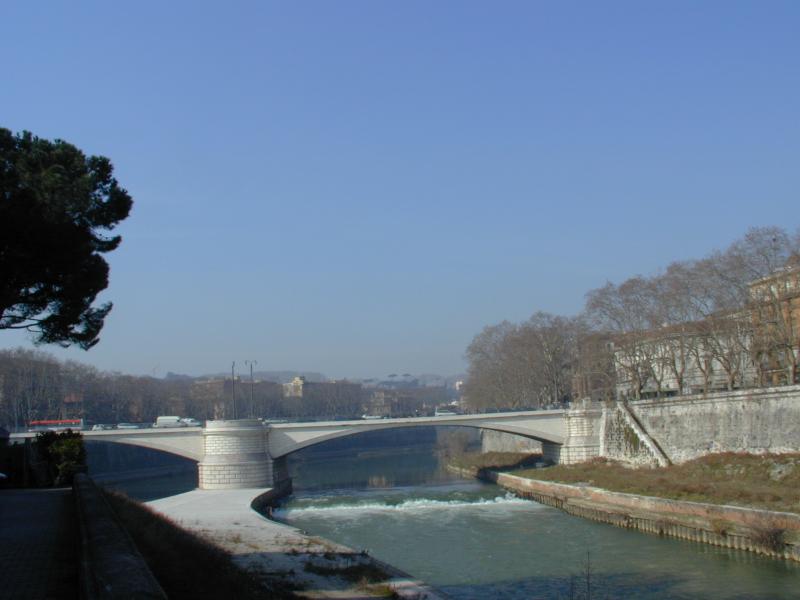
000205 13 ponte garibaldi dall'Isola